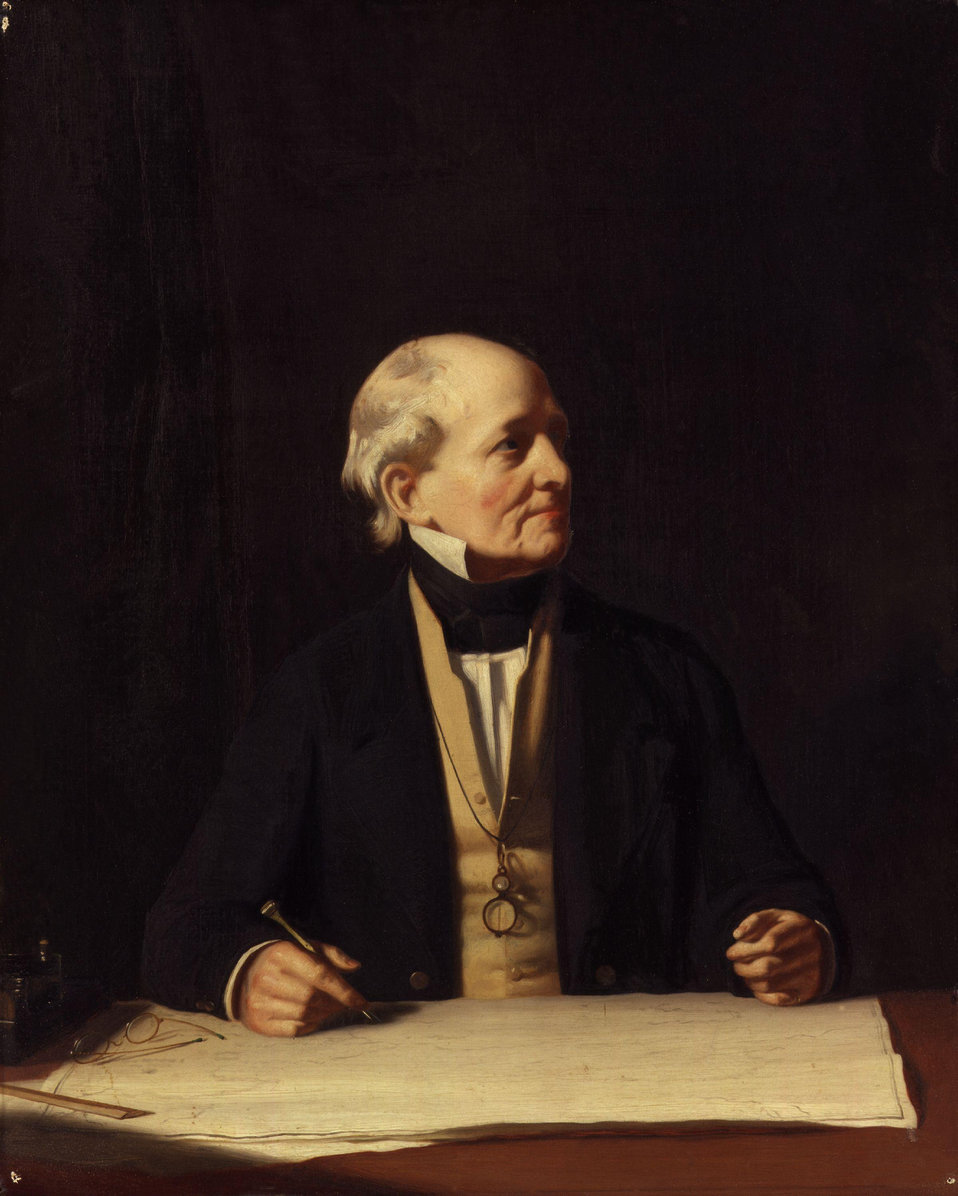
Sir Francis Beaufort by Stephen Pearce